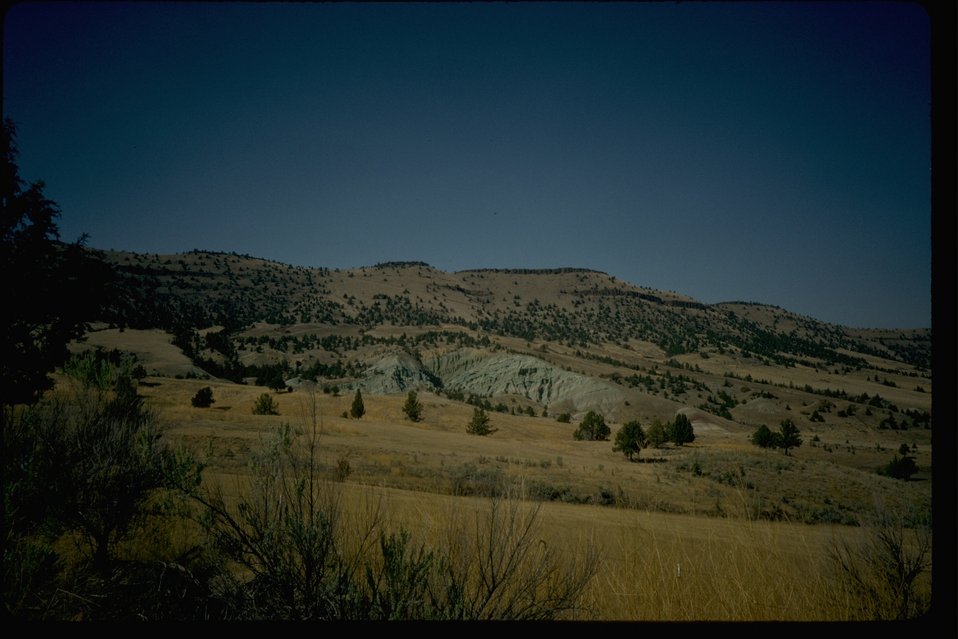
Stove Pipe Springs located at Sutton Mountain.